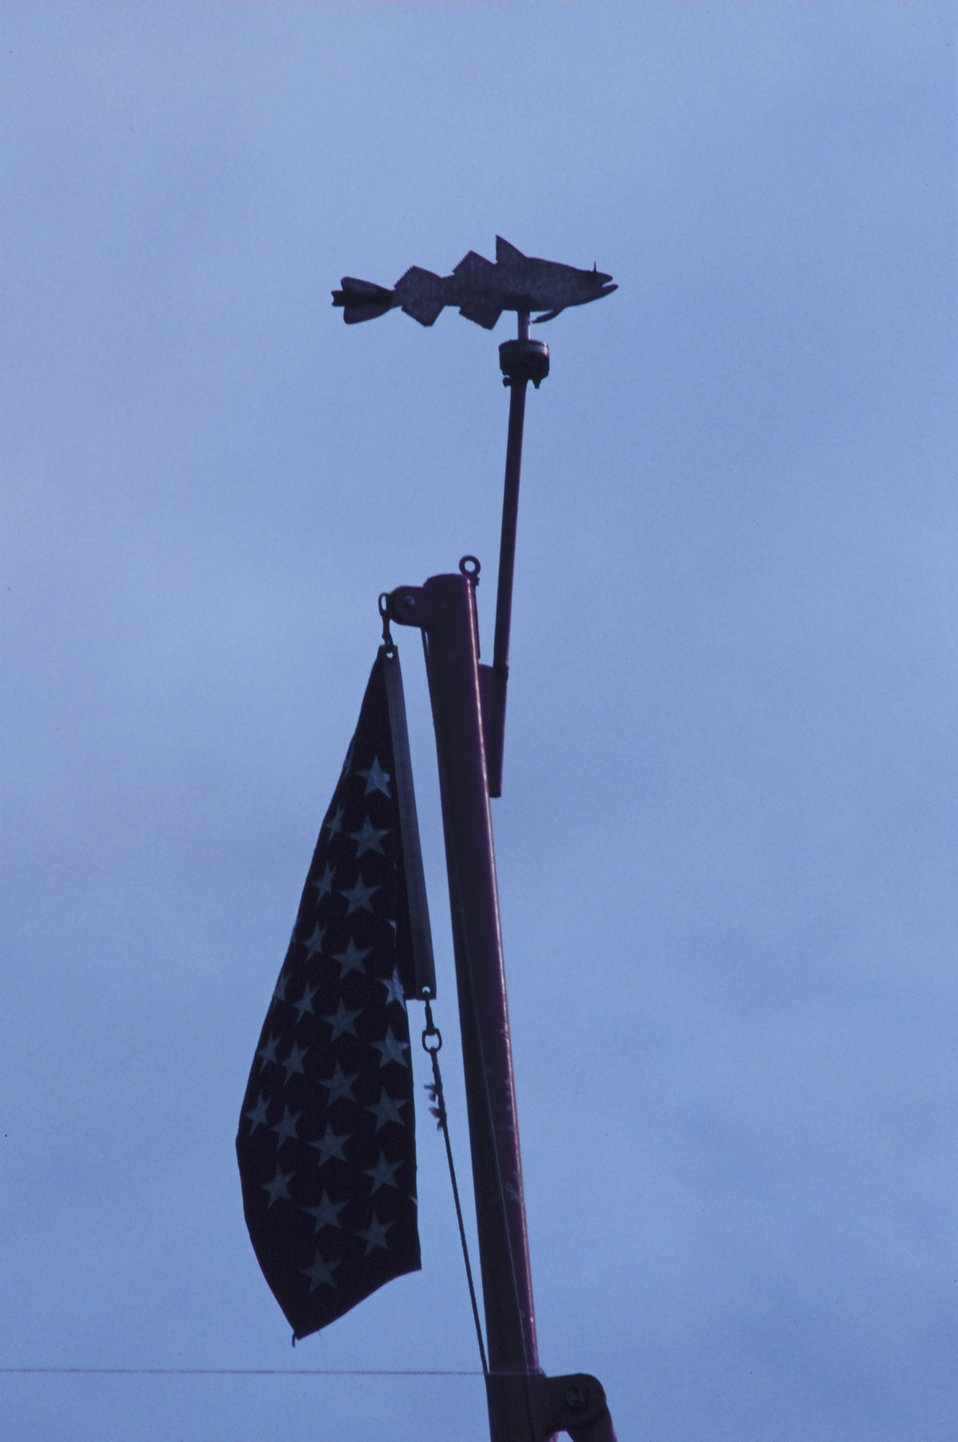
Old-fashioned fish wind-vane on the bow of the MILLER FREEMAN